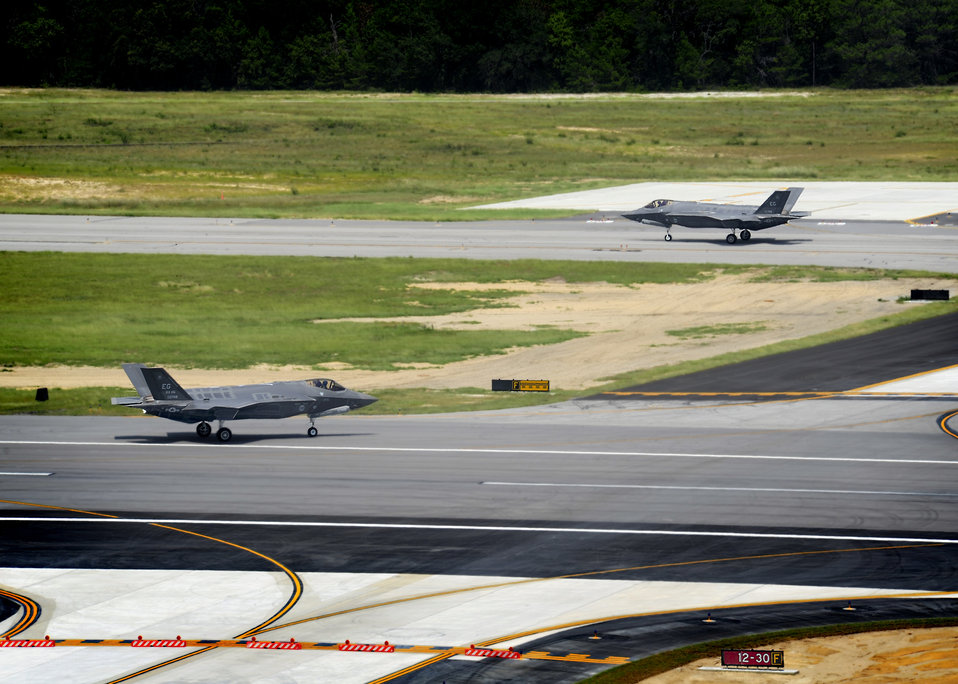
Eglin F-35 number increases to four

Two F-35A Lightning II joint strike fighters were delivered to Eglin Air Force Base, Fla., Aug. 31. Labeled as AF-10 and AF-11 by Lockheed Martin, the new JSFs bring the total count of the fifth-generation fighter aircraft here to four.